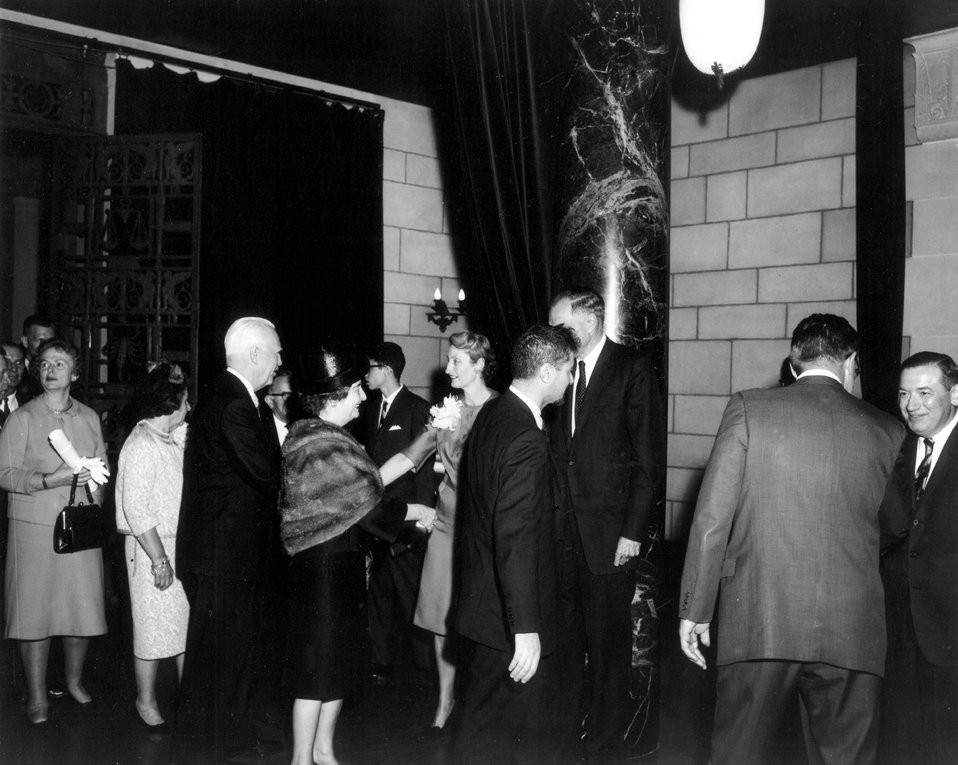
Lawrence Award, 1966.